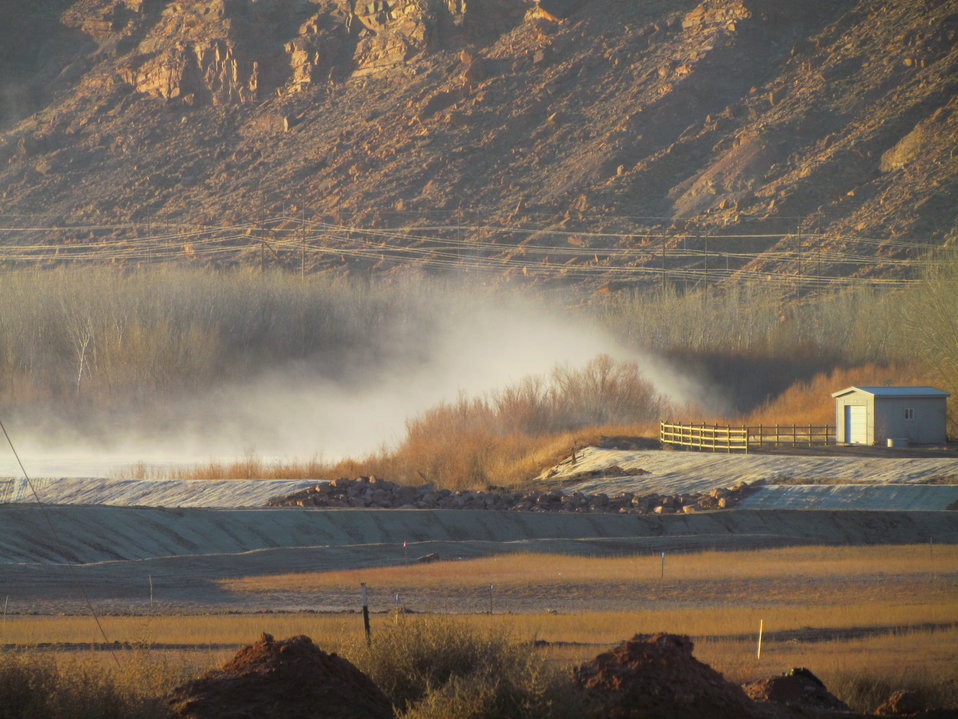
Early morning at Moab

Early morning sunlight highlights the mist coming off the Colorado River near the well field at the Moab, Utah, site.